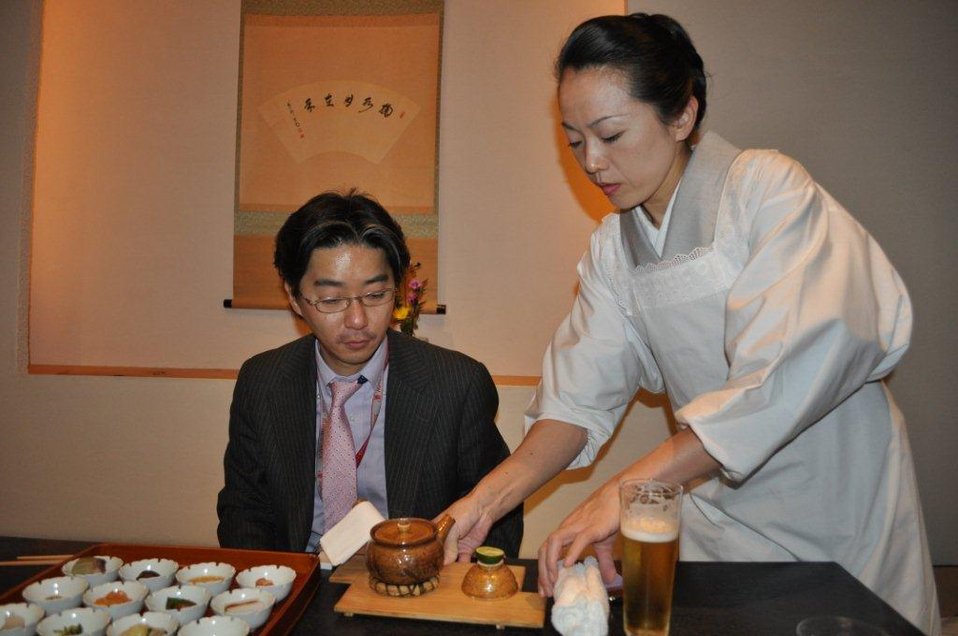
Geithner visit to Asia, November 4-12, 2010

Asahi Shimbun's Treasury reporter Toshi Ogata takes in a traditional Japanese meal in Kyoto, Japan